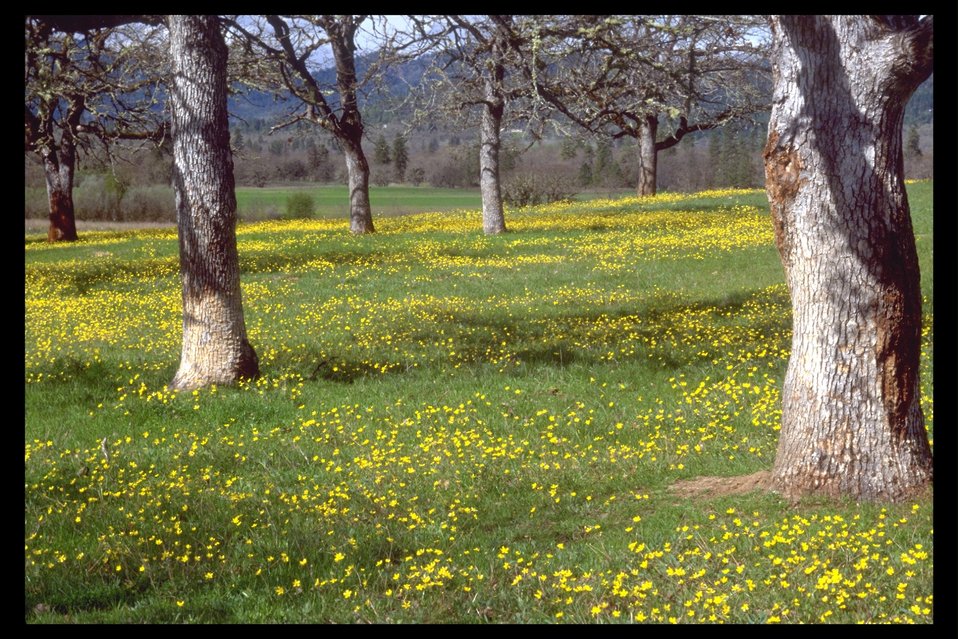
Oak Savannah with Buttercup in a meadow near Antioch Road in Sam's Valley.